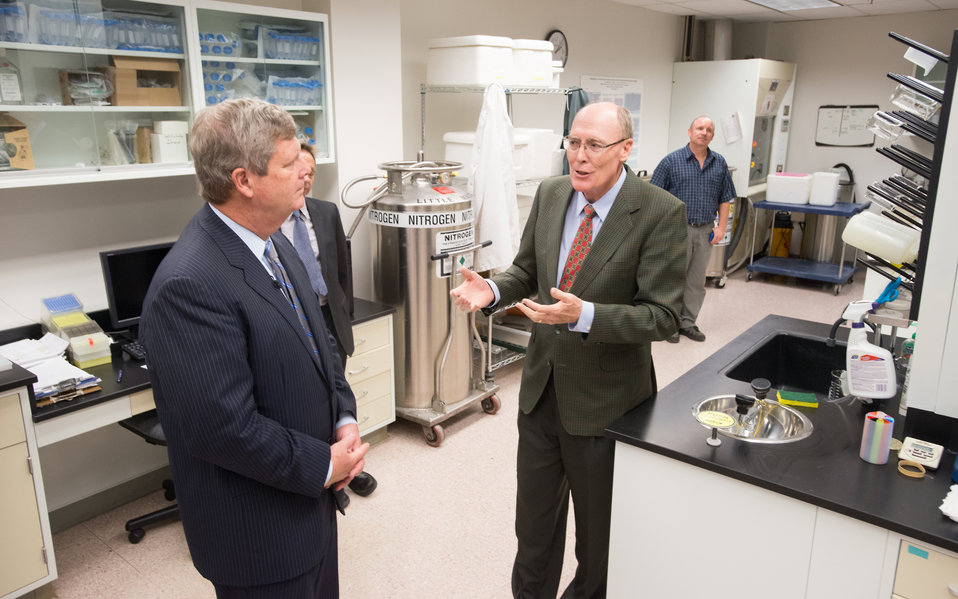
U.S. Department of Agriculture (USDA) Secretary Tom Vilsack listens to Agriculture Research Service (ARS), National Center for Genetic Resources Preservation (NCGRP), National Animal Germplasm Program (NAGP), Program Leader Dr. Harvey Blackburn talks about the original need and history of the NAGS embryo and sperm freezing and reconstitution technology; the productive cooperation and collaboration with industry, other agencies and international partners; and how the data from their work becomes part of (animal genetic resource information network (AnimalGRIN) an ever-growing source of information, during his visit in Ft. Collins, CO, on Wednesday, Nov. 6, 2013.